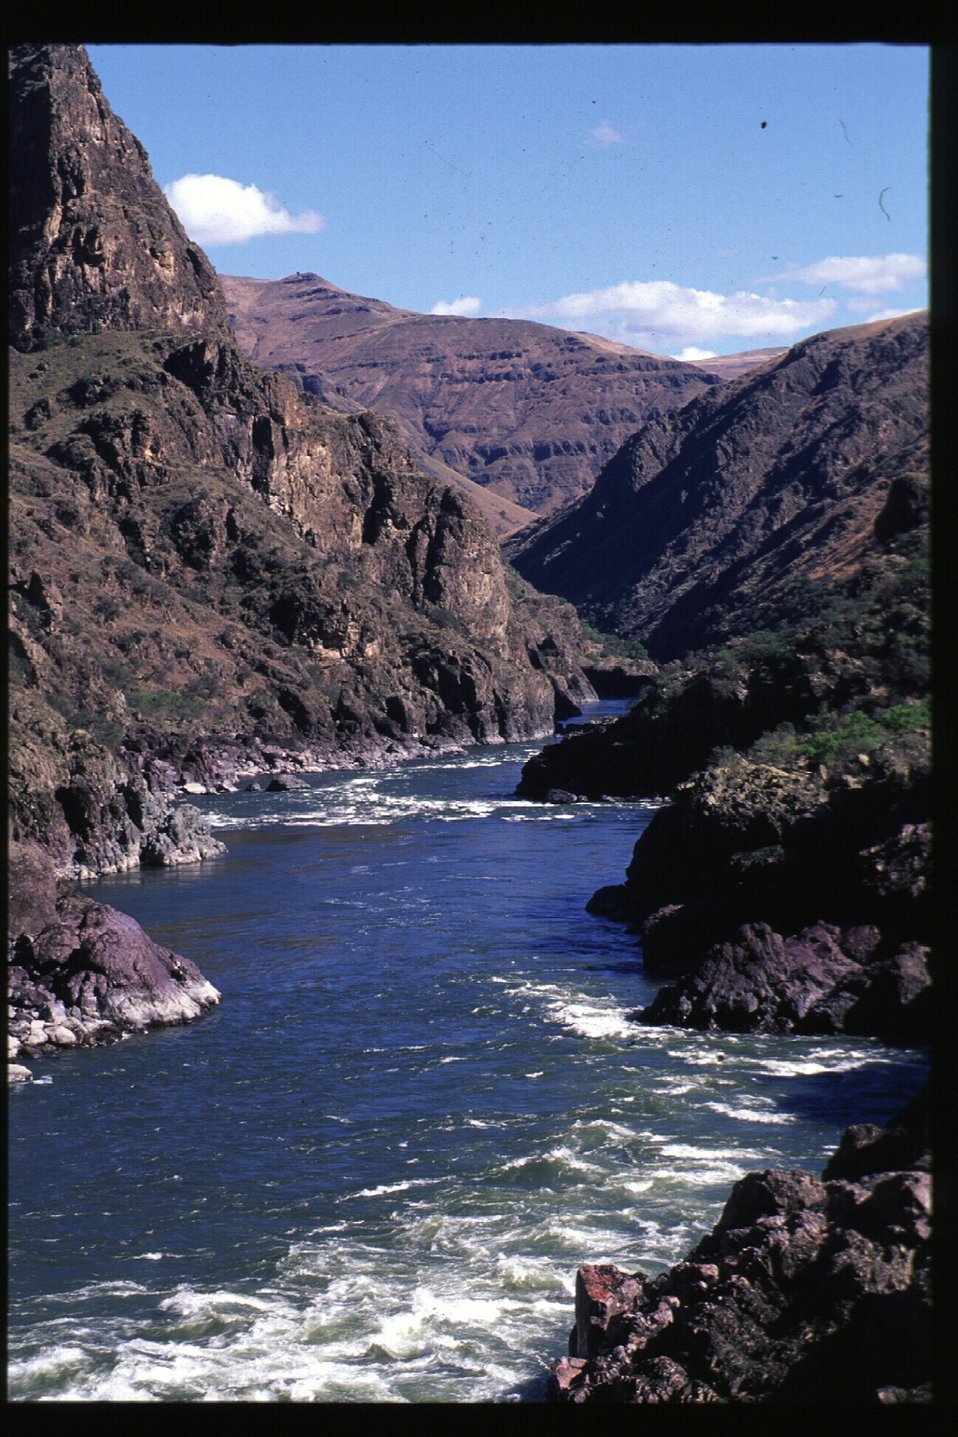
Scenic white water Lower Salmon River Cottonwood Field Office UCSC Upper Columbia Salmon Clearwater District